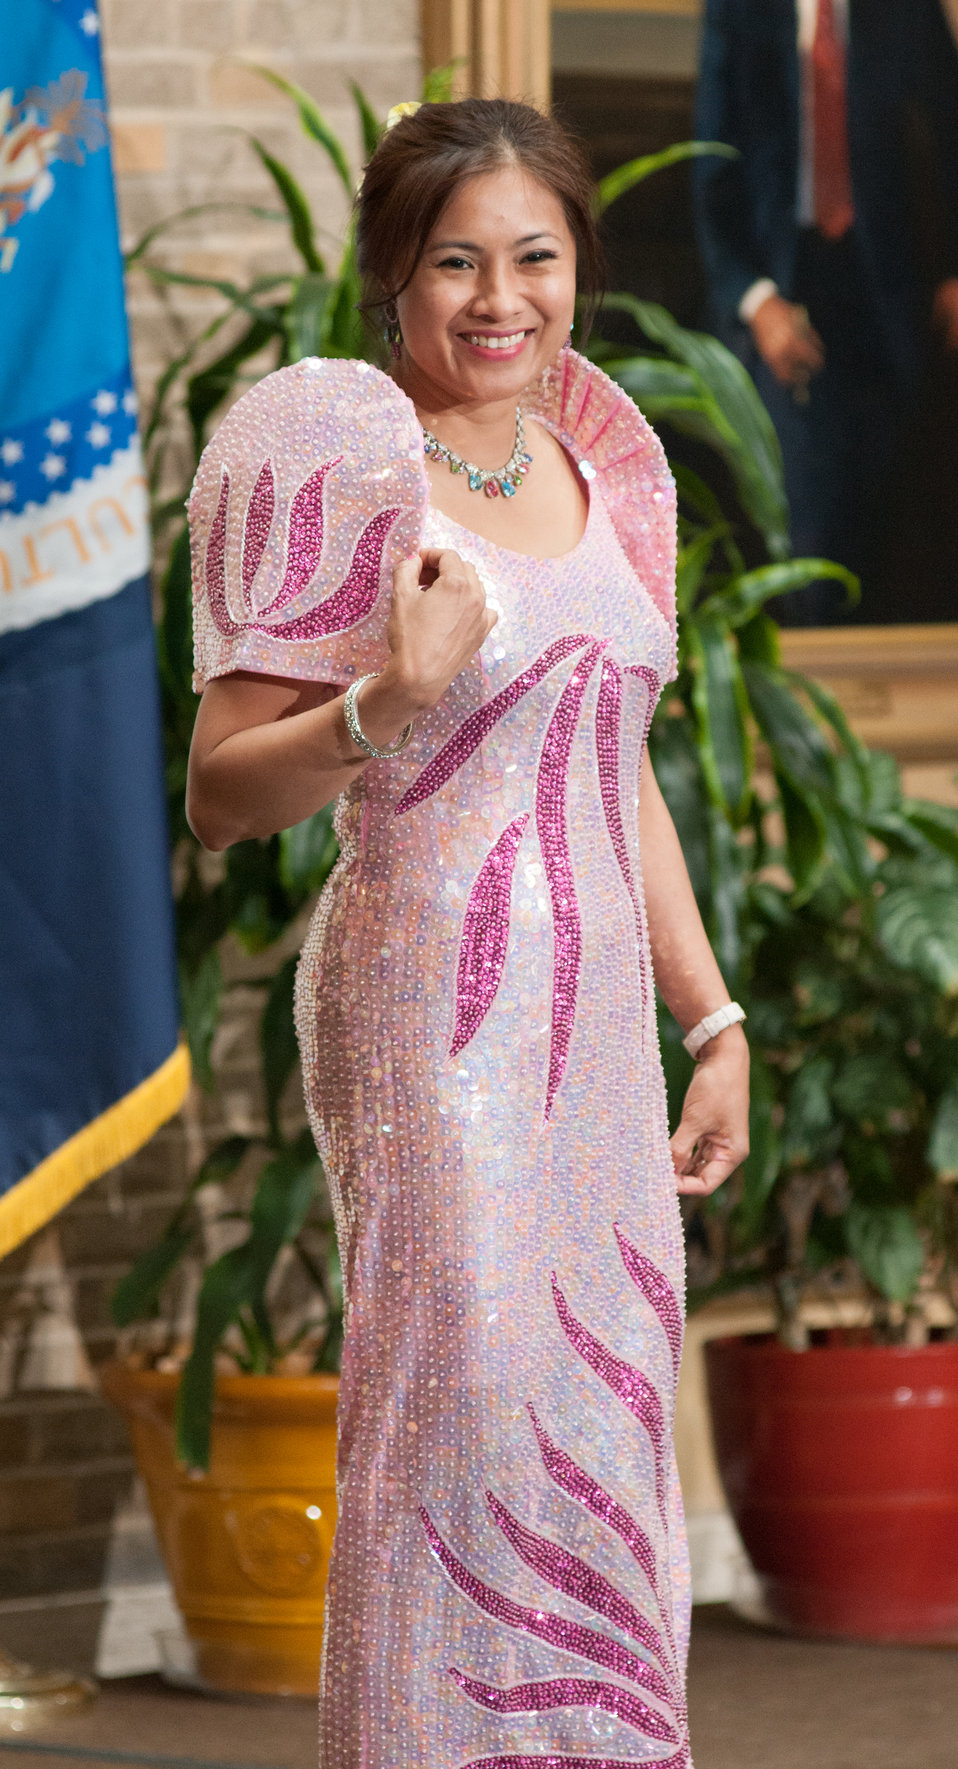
Traditional clothing from various Asian countries were demonstrated during this show of clothing, part of the U.S. Department of Agriculture (USDA) Asian Pacific American Heritage Month Observance program, at the USDA headquarters, Whitten Building patio, in Washington, D.C., on Thursday, May 23, 2013. This year’s theme is “Building leadership; Embracing the Cultural Values and Inclusions.”